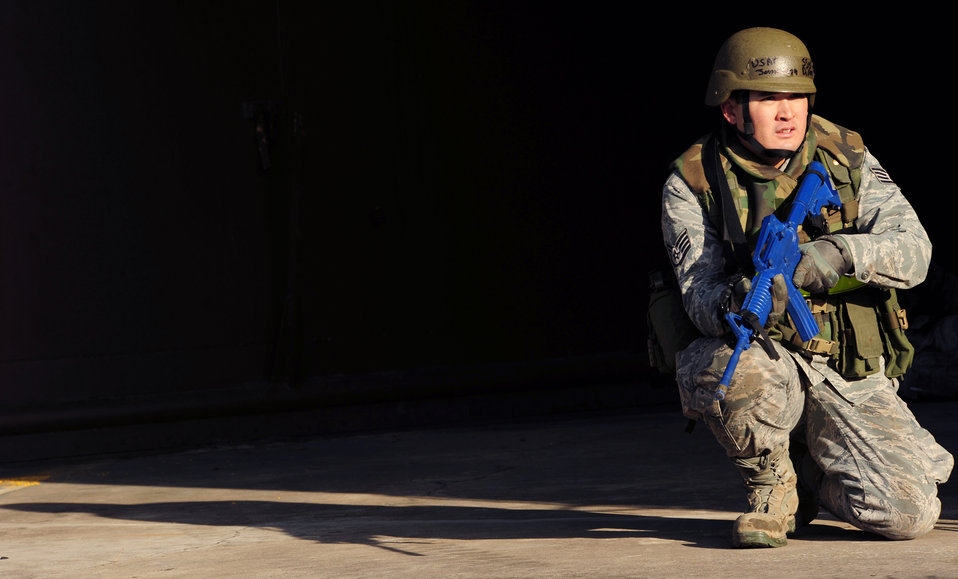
Airmen from across the world participate in Silver Flag

Staff Sgt. Jonathan Dillon takes a defensive stance after a simulated attack Nov. 20, 2010, during a practical application portion of Silver Flag at Ramstein Air Base, Germany. Silver Flag is a weeklong, ongoing training program that includes Airmen from various duty stations around the world. Members of NATO forces have also been invited to attend. Silver Flag combines classroom and practical application exercises to prepare Airmen for deployment. Sergeant Dillon is assigned to the 442nd Civil Engineer Squadron at Whiteman Air Force Base, Mo.